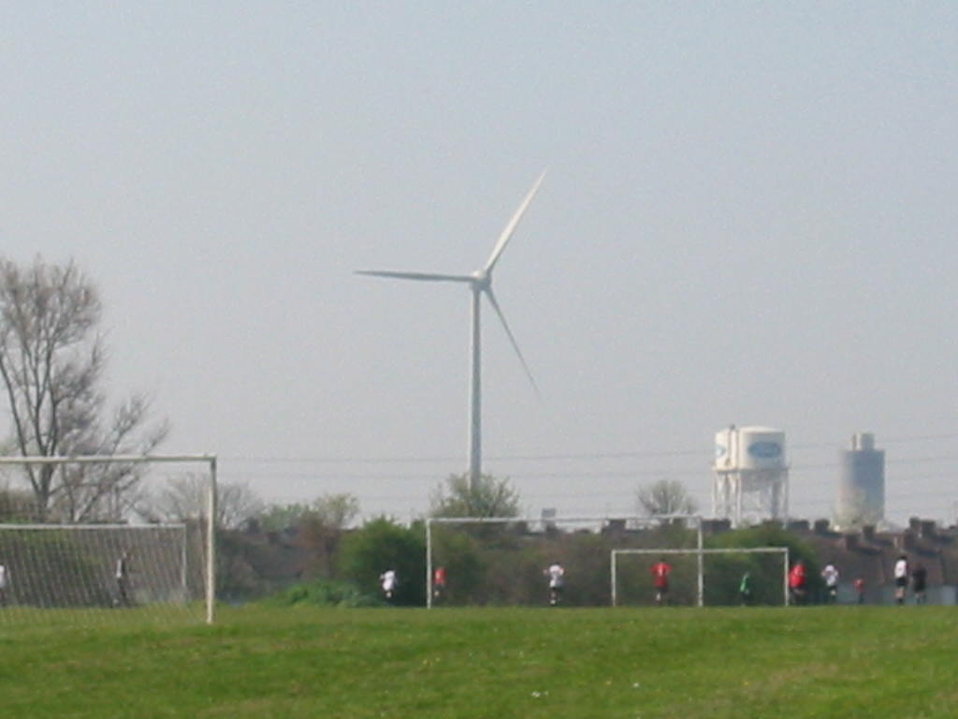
One of the Dagenham wind turbines